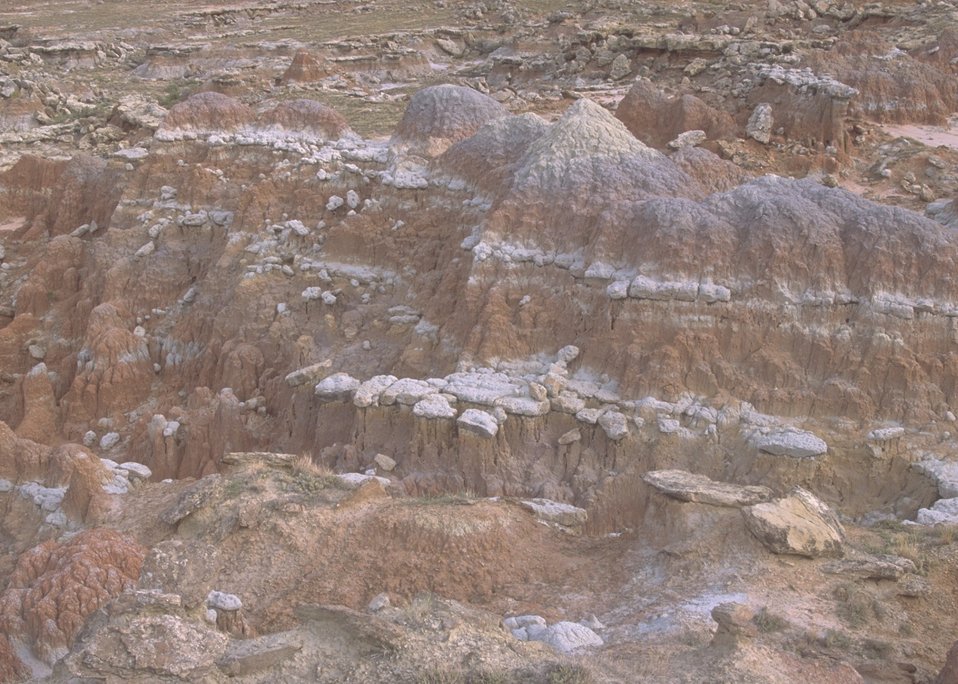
Gooseberry Interpretive Area, Worland Field Office.